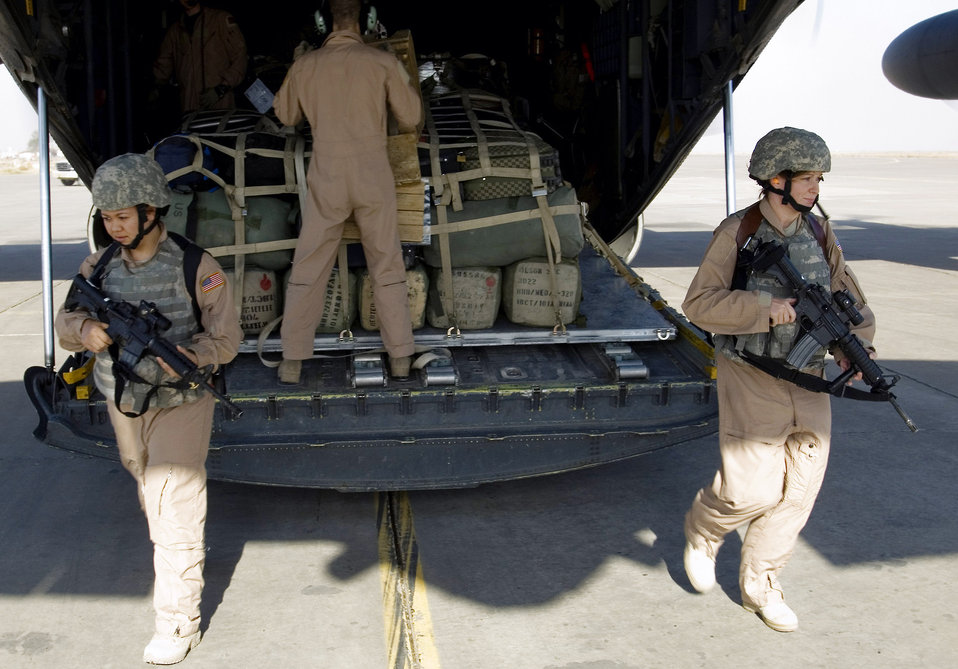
Airmen provide FAST coverage

Senior Airmen Rosie Munoz (left) and Michelle Kendall exit to provide ground security for a 777th Expeditionary Airlift Squadron C-130 Hercules Nov. 22 at a remote location in Iraq. Airmen Munoz and Kendall are Fly Away Security Team members with the 332nd Expeditionary Security Forces Squadron. These Airmen make up the only all-female 332nd ESFS FAST, stationed at Joint Base Balad, Iraq. Airman Kendall is a native of Houston, Pa. Airman Munoz calls El Paso, Texas, home.